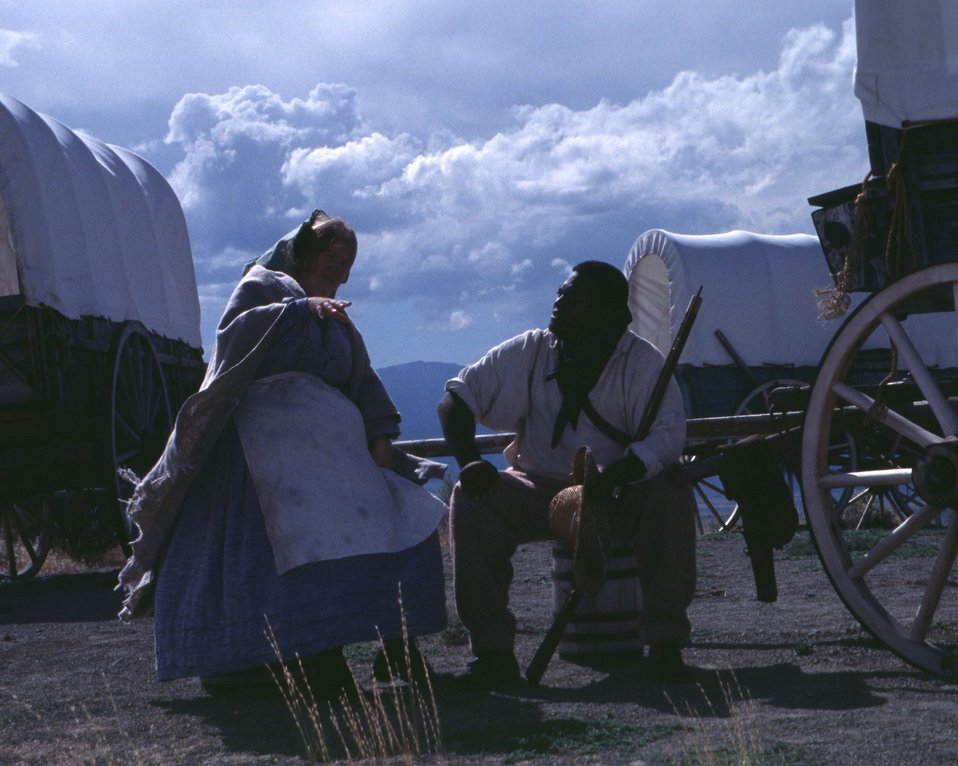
Nancy Harms and Dylan Prichertt portray pioneer woman and a black pioneer at an Oregon Trail wagon encampment.